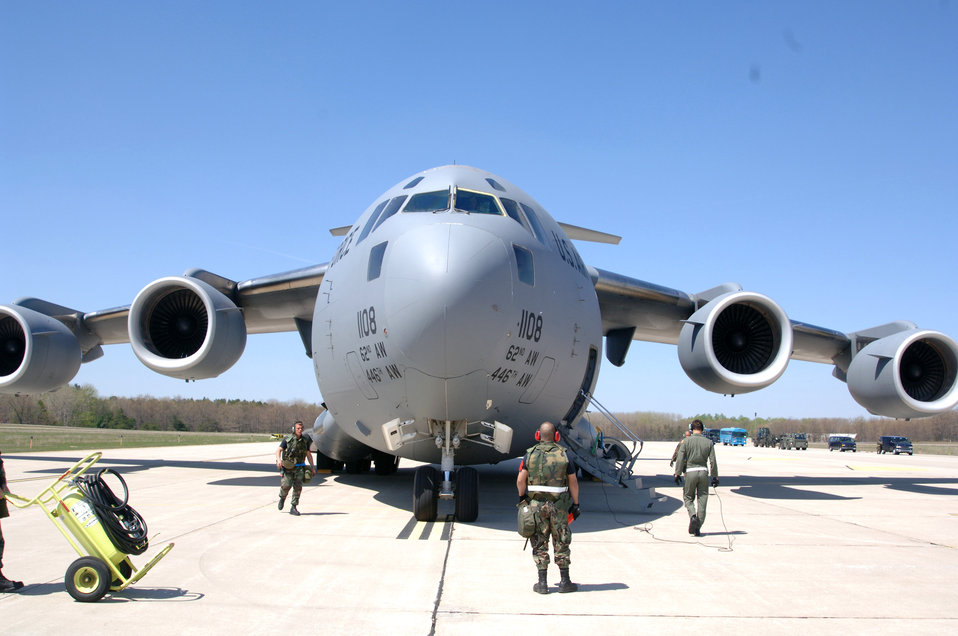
Exercise Thunderbolt

A C-17 Globemaster III from McChord Air Force Base, Wash., sits on the tarmac at Alpena, Mich., during Exercise Thunderbolt on Monday, May 8, 2006.